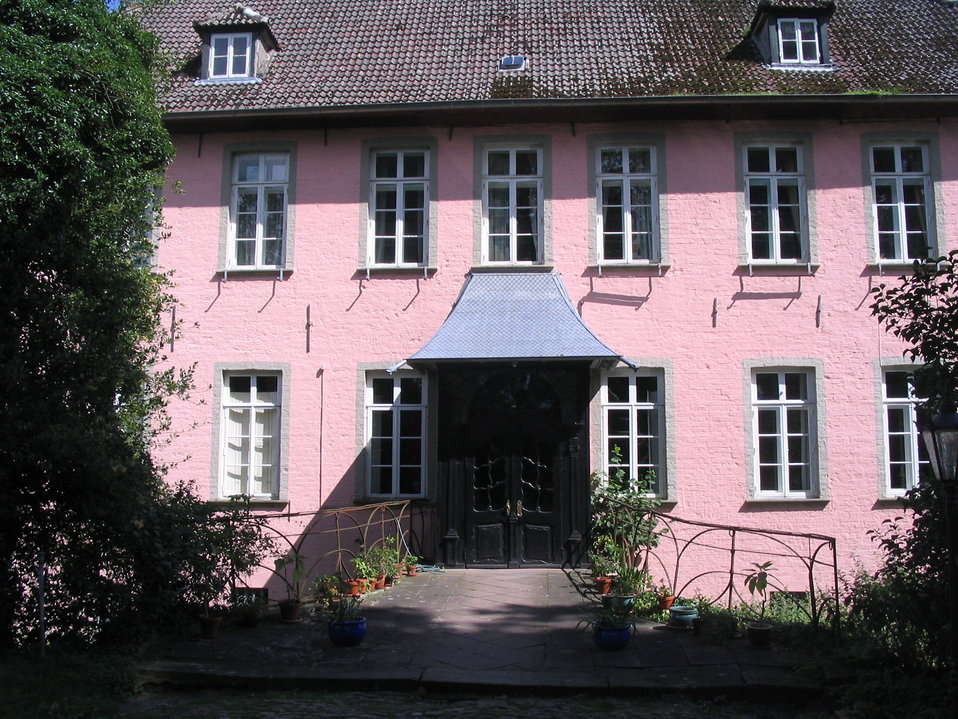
Deutsch: Dammgut in Ritterhude, Niedersachsen.